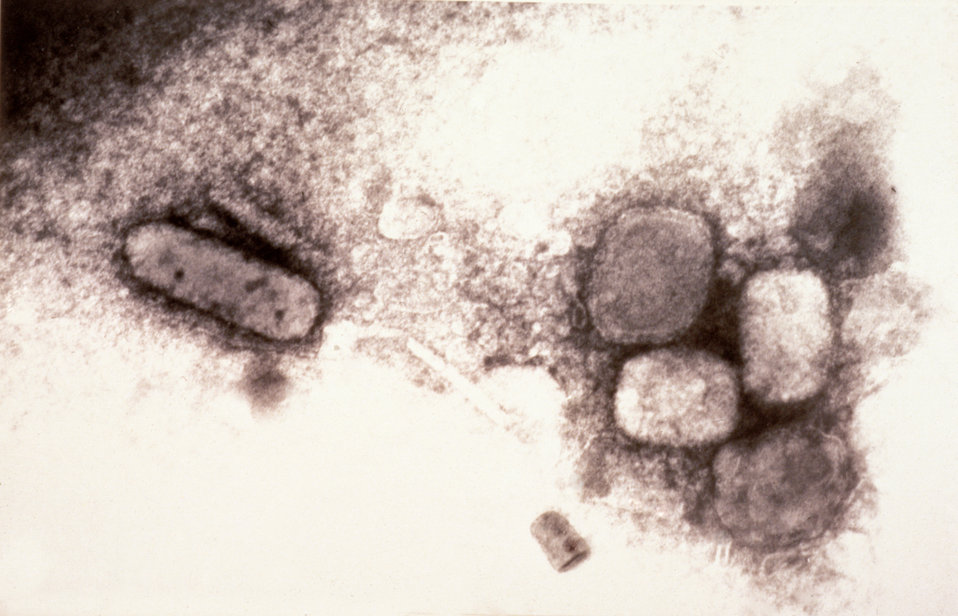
This electron micrograph depicts the variola, smallpox virus using a negative stain technique; Magnification 65,000X.